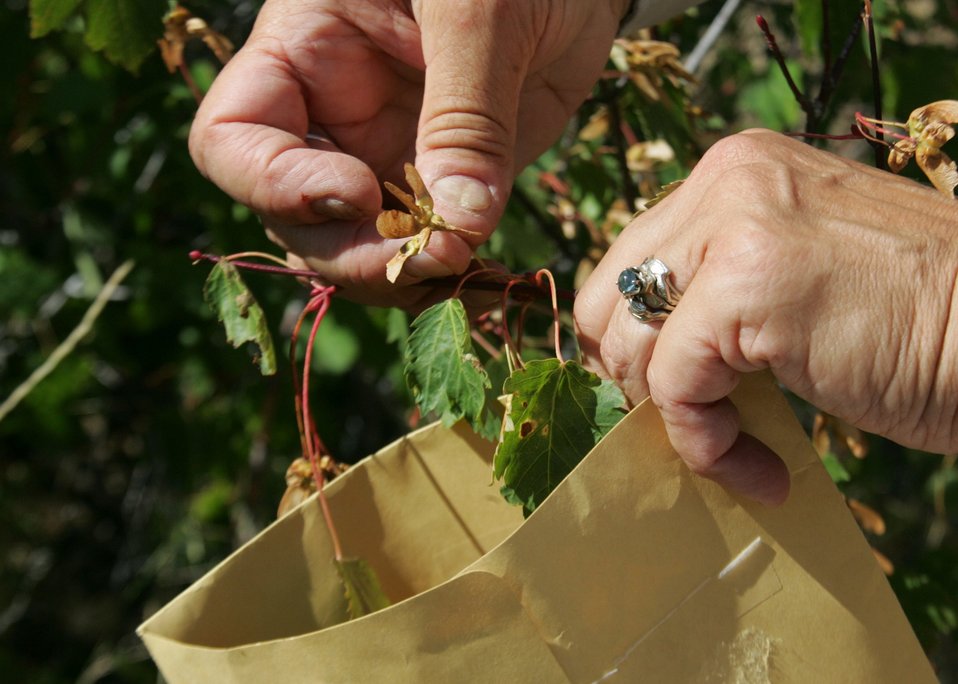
Kata Bulinski from the Baker City Field Office collects seeds from a Moutain Maple in the Snake River area of eastern Oretgon.